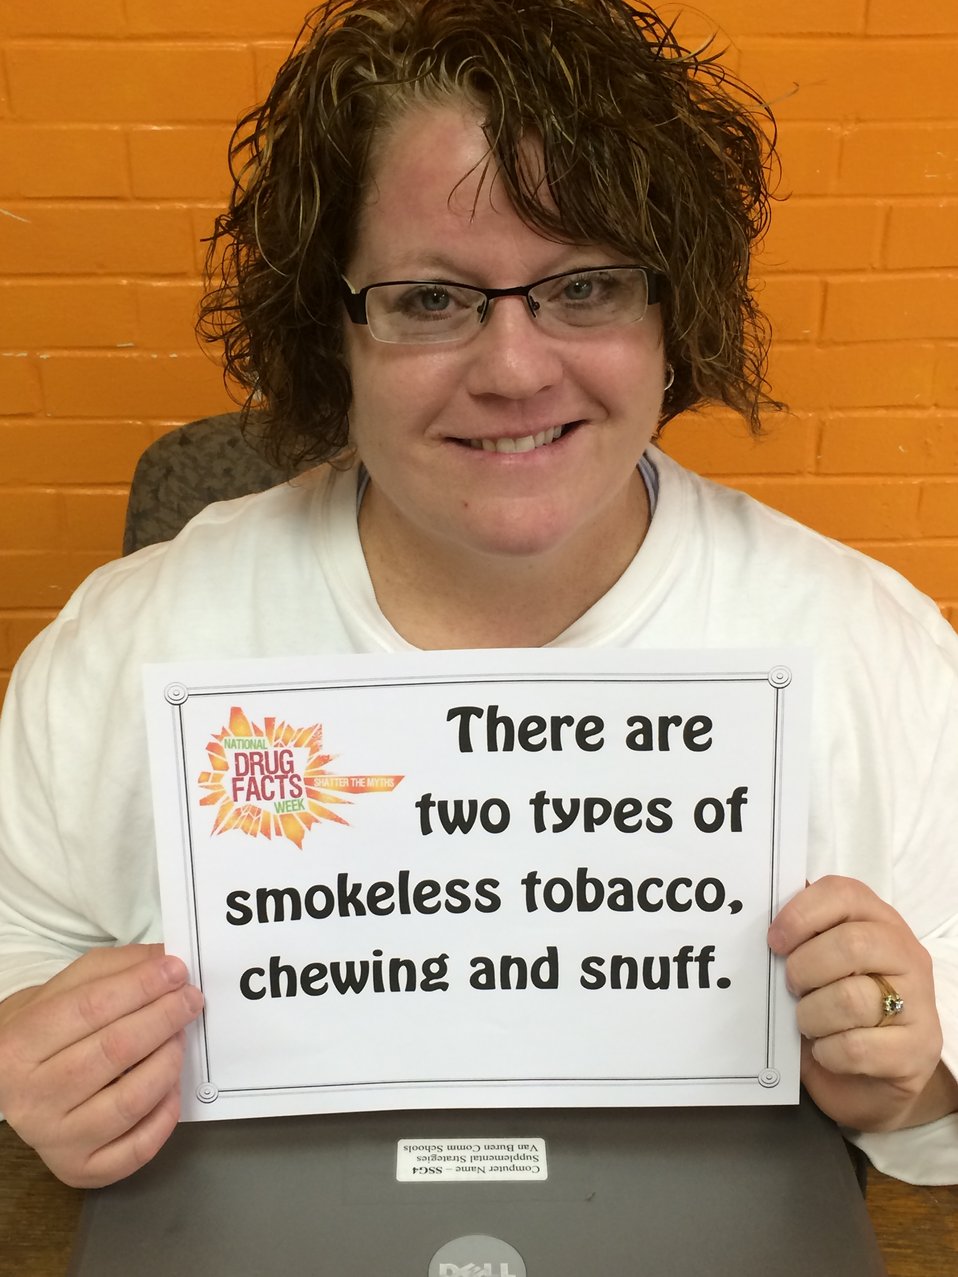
Factoid: Smokeless Tobacco

Teenagers from the Van Buren County SAFE Coalition's, Youth Leadership Council (YLC) in Keosauqua, Iowa participate in various events during National Drug Facts Week, 2014.